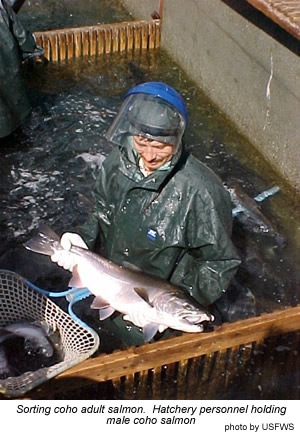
Sorting Adult Coho Salmon

A USFWS Pacific Region employee Paul Kaiser sorts adult coho salmon at the Quilcene National Fish Hatchery. He is holding a male coho.

These fish are held until the fish are mature enough to use for spawning (egg collection). This can be up to two months.